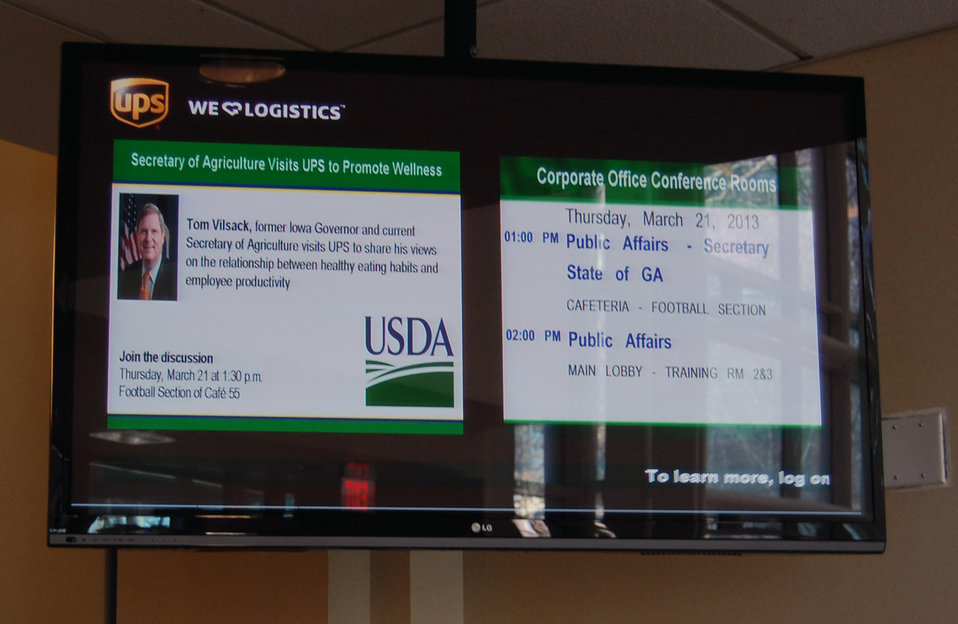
Sign at the United Parcel Service (UPS) headquarters in Atlanta, GA, announcing the visit of Agriculture Secretary Tom Vilsack on Mar. 21, 2013.